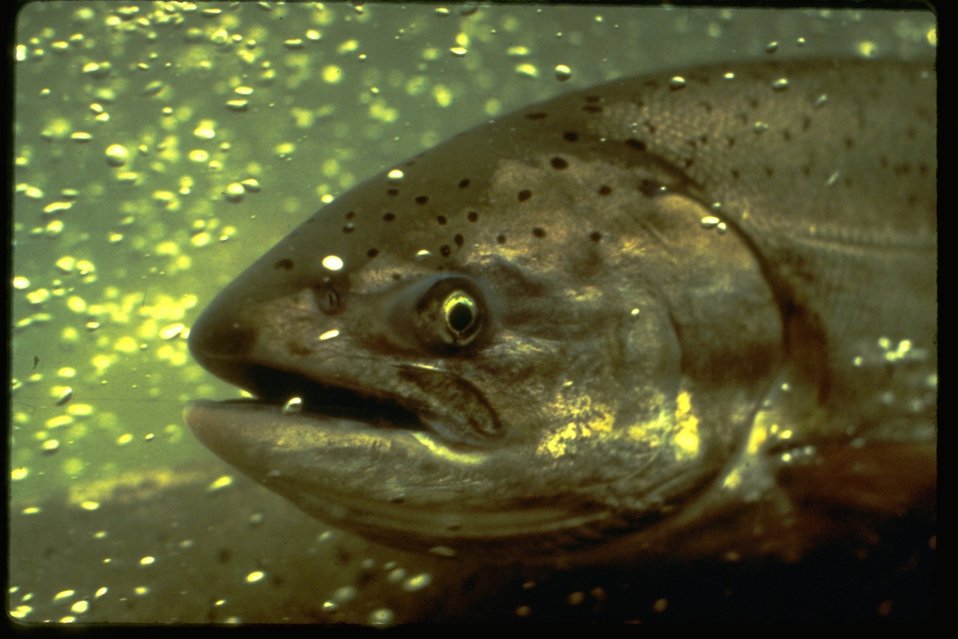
Closeup of a salmon.